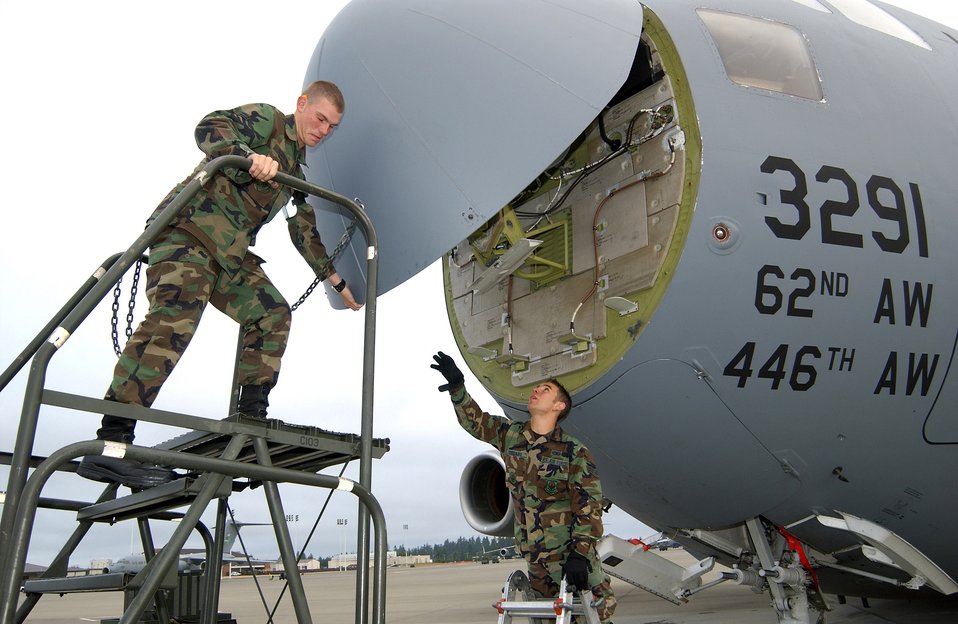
Combat Training

MCCHORD AIR FORCE BASE, Wash. -- Airmen 1st Class Shawn Scroggins (left) and Anthony Cordaro open the nose radome of a C-17 Globemaster III during a combat training class Aug. 22. The class is designed to train Airmen on upgrades in maintaining the C-17. Airmen Scroggins and Cordaro are aircraft maintainers assigned to the 62nd Aircraft Maintenance Squadron.